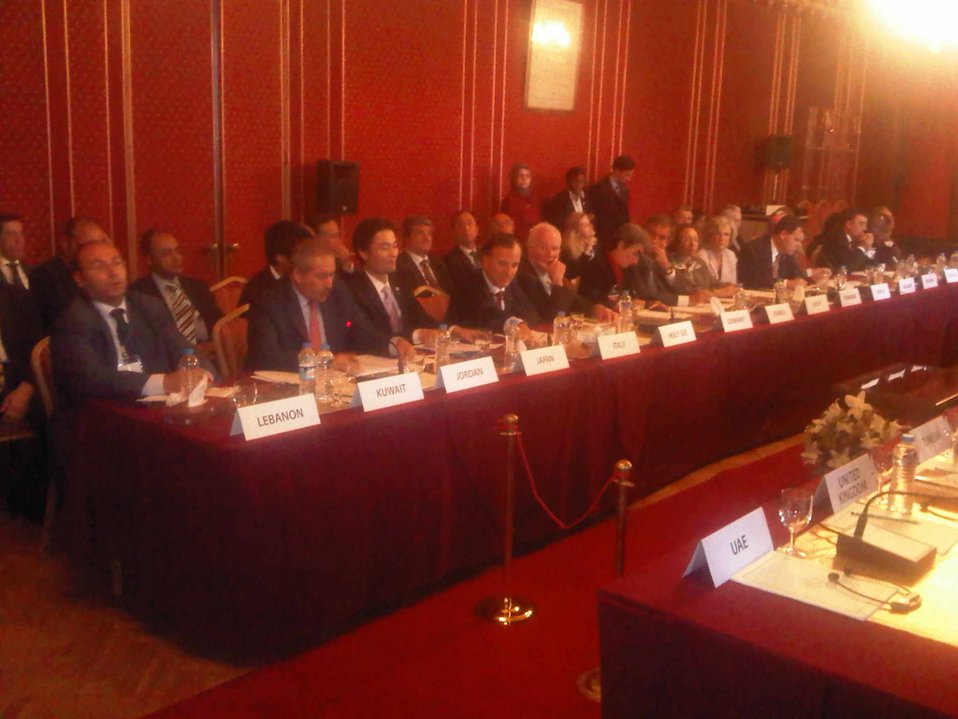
Members of the Organization of the Islamic Conference (OIC) discuss religious tolerance issues while meeting in Istanbul, Turkey, on July 15, 2011.